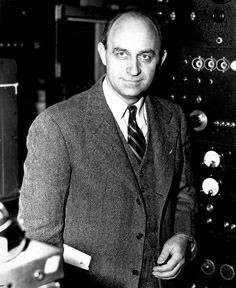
Enrico Fermi.